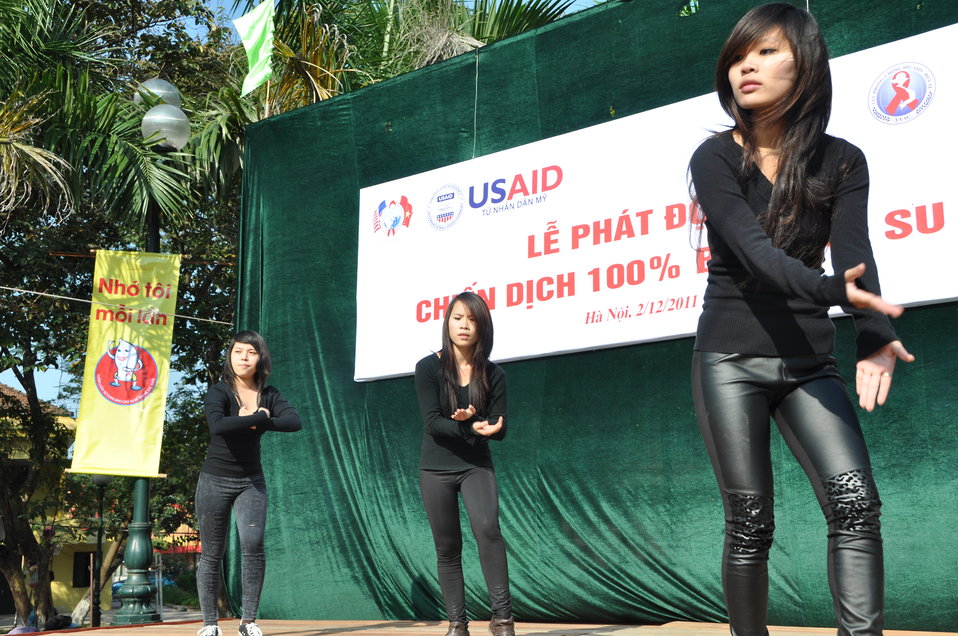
100% Condom Use Campaign Launch, Dec. 2, 2011